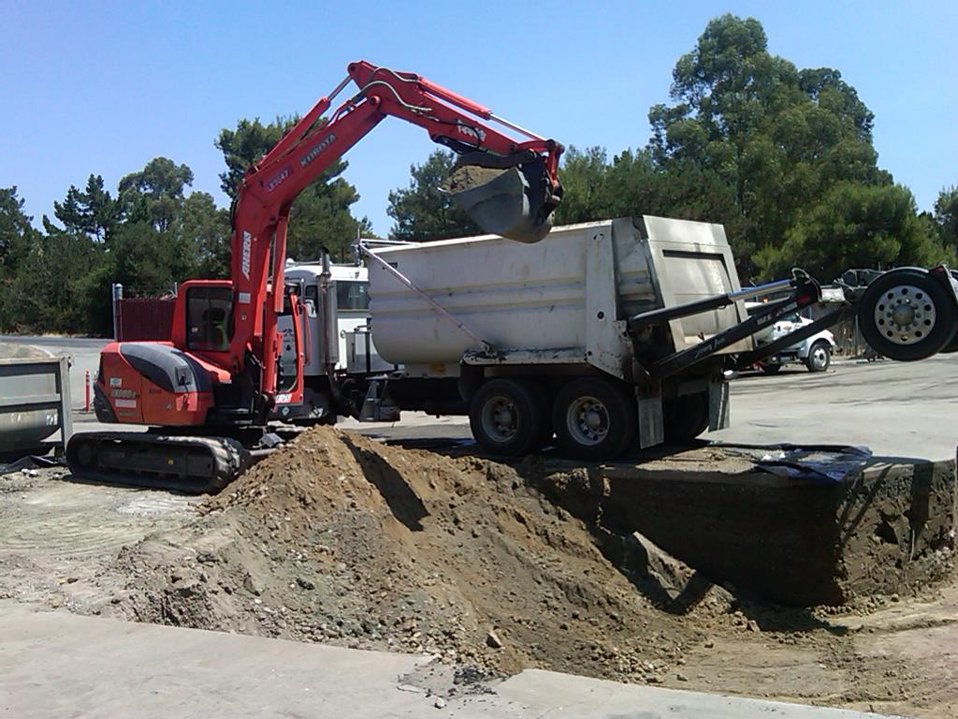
Recovery Act Supports Soil and Debris Cleanup, Groundwater Treatment at SLAC

Recovery Act workers are on track to remove more than 30,000 cubic yards of contaminated soil and debris at the SLAC National Accelerator Laboratory by September 2011.
The Recovery Act invested $14.3 million in legacy cleanup activities at SLAC. In addition to removing contaminated soil and debris that is shipped to local disposal facilities, Recovery Act workers installed three new groundwater treatment systems.